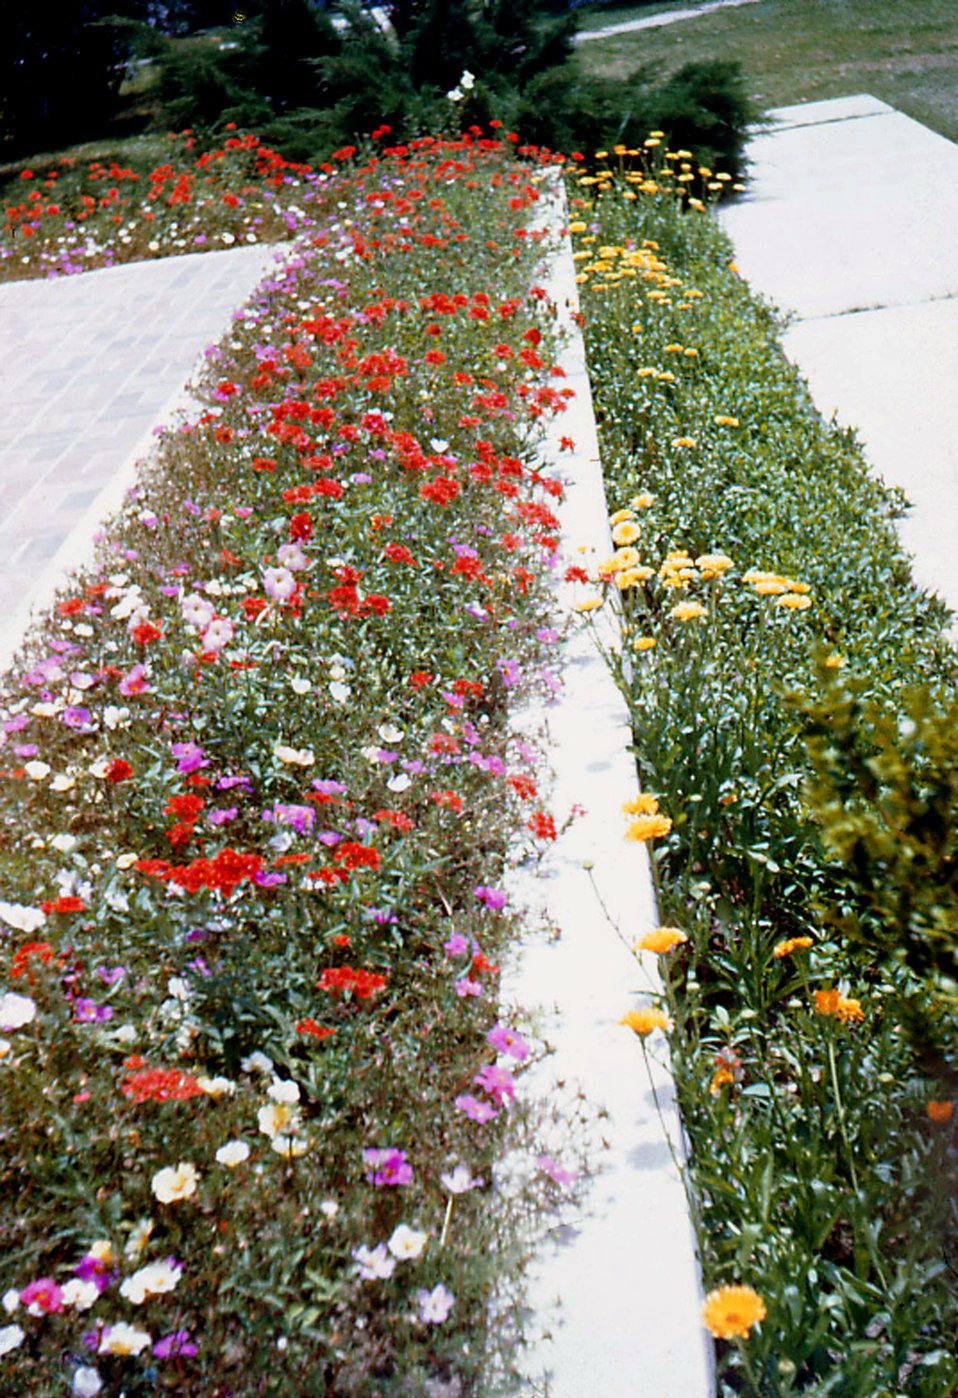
This was one of the beautiful flower gardens that was growing on the grounds of the historic Carville, Louisiana Leprosarium, around one of the hospital's churches. Some of the patients had magical green thumbs, to which the magnificence of these flowers attests. Being that the patients were for the most part quarantined, and therefore, sequestered from the surrounding society, participation in outdoor activities such as gardening, was enjoyed by all patients, as well as staff members.